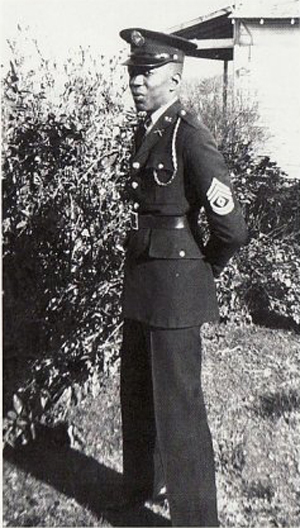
Artist Roy LaGrone

Roy LaGrone immortalized the Tuskegee Airmen through art